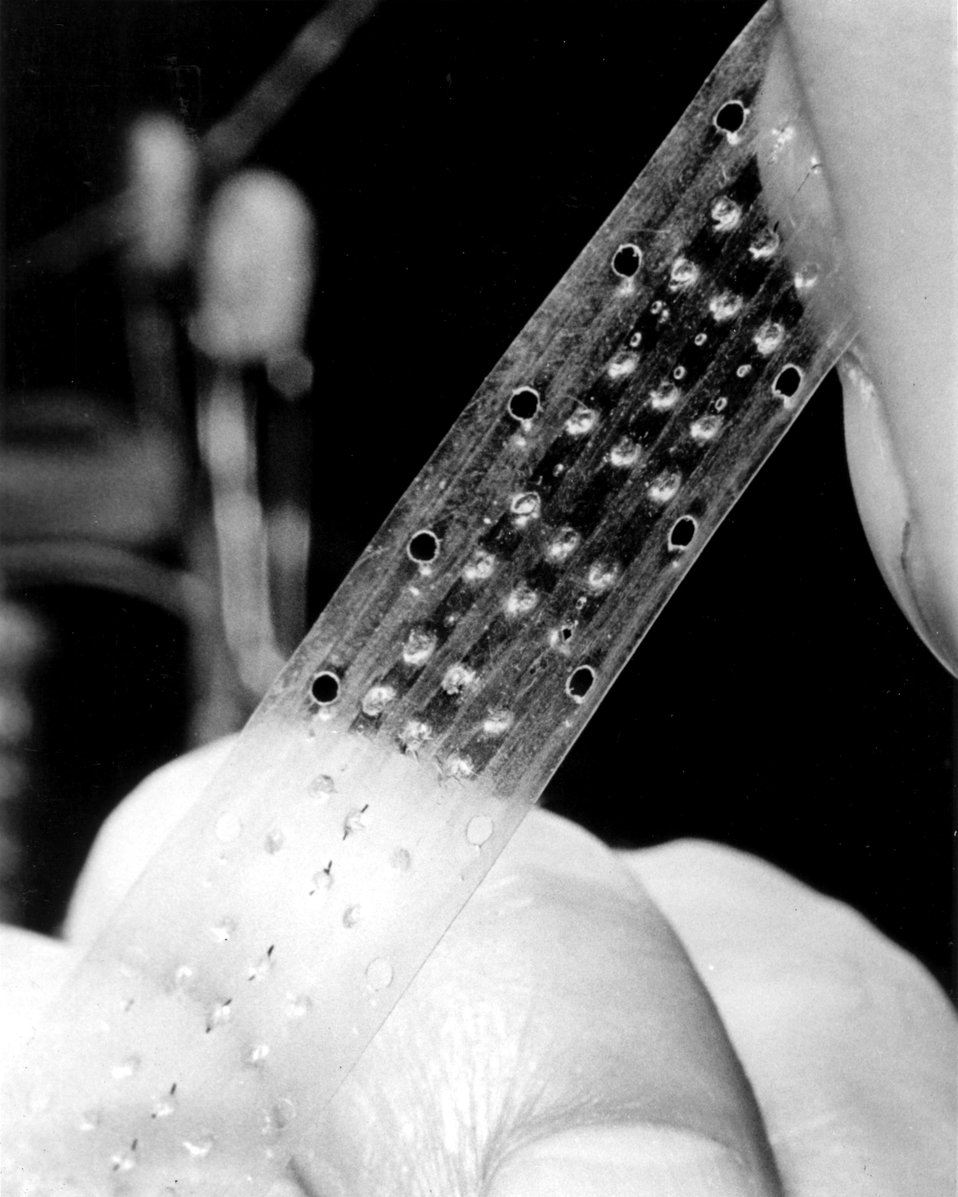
Braille machine reading belt at Argonne. c.1974